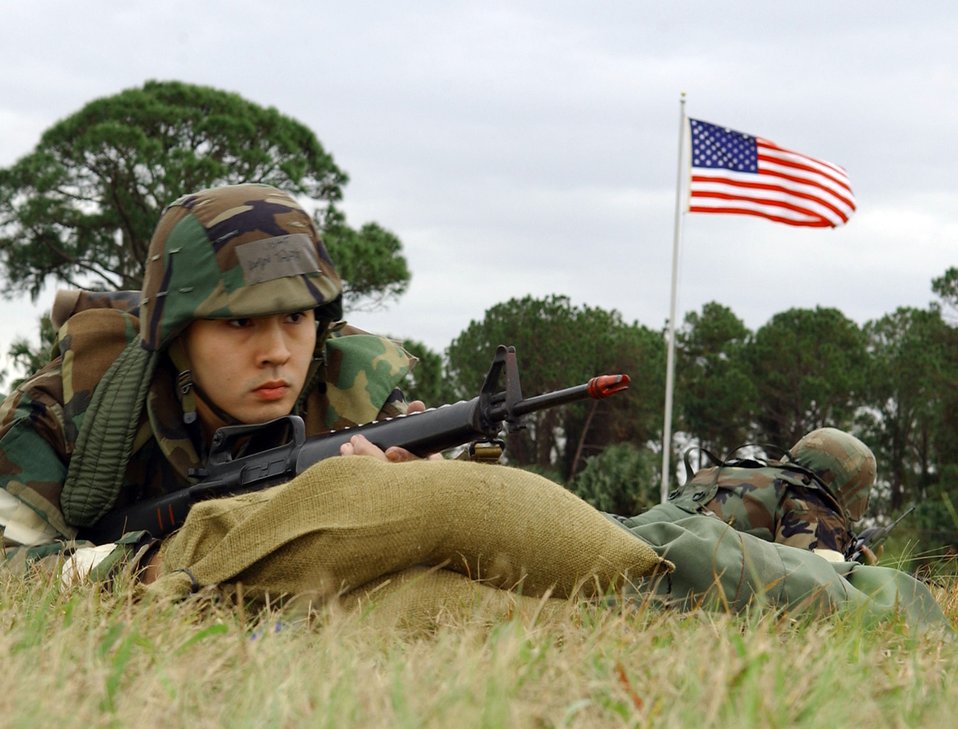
Defensive position

MACDILL AIR FORCE BASE, Fla. (AFPN) -- Airman Huy Thai guards a defensive fighting position during an ability to survive and operate exercise here. The exercise prepares Airmen for future deployments.